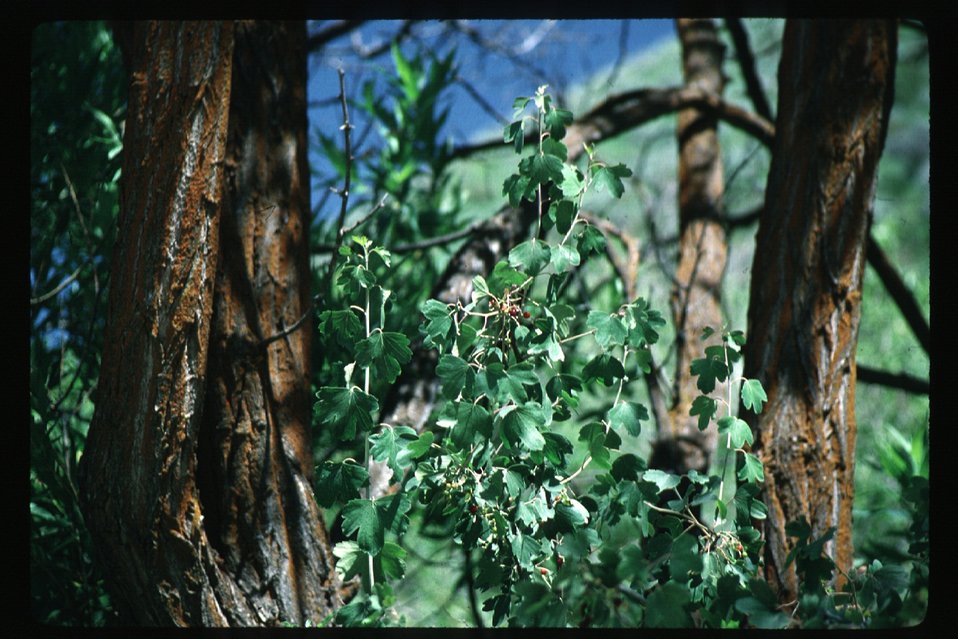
Rocky Canyon Boise Foothills Four Rivers Field Office LSRD Lower Snake River District